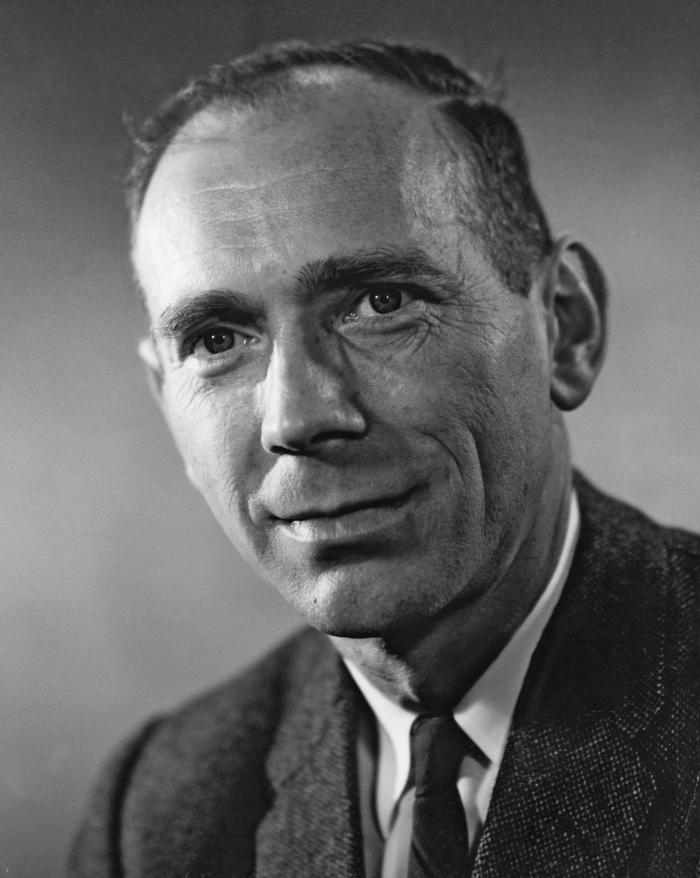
Geoffrey M. Jeffery (1919 - ), Sc.D., is a career US Public Health Service officer whose areas of research include the host-parasite relationship between human malaria and its vectors.